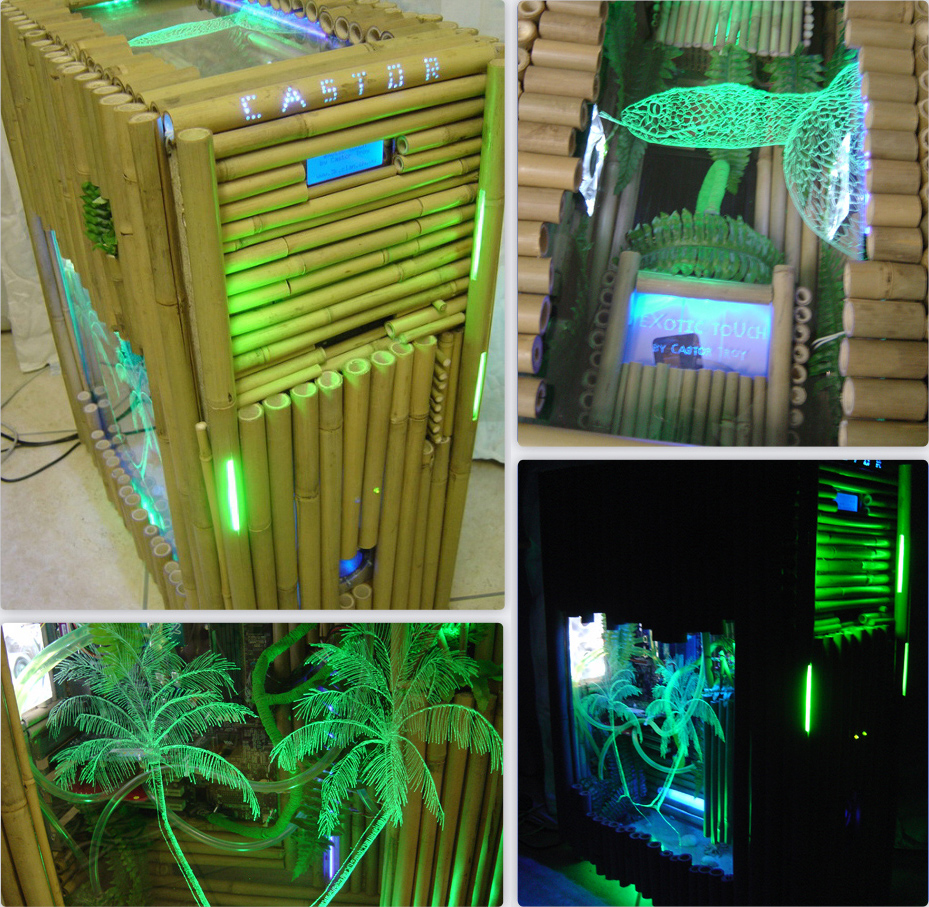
Custom Case made of wood / bamboo.